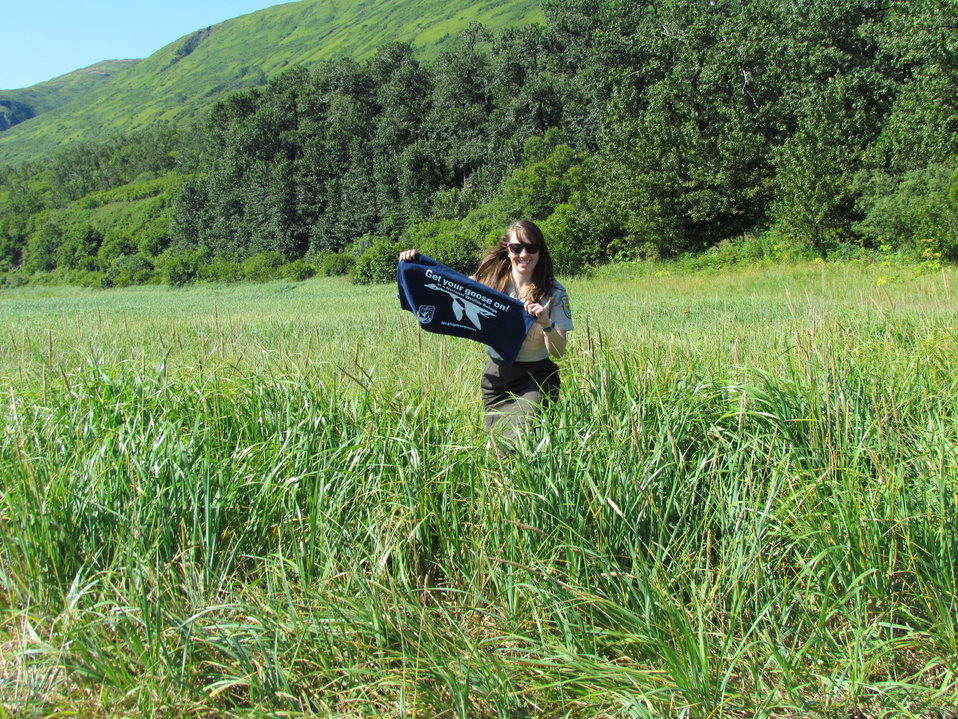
Get Your Goose On! - Alaska Style

Seasonal Park Ranger, Kari Eschenbacher

Credit: Shelly Lawson / USFWS

The Kodiak National Wildlife Refuge is a United States National Wildlife Refuge in the Kodiak Archipelago in southwestern Alaska, United States.

The Kodiak National Wildlife Refuge includes the southwestern two-thirds of Kodiak Island, Uganik Island, the Red Peaks area of Afognak Island and all of Ban Island in the archipelago. It encompasses 1,990,418 acres (8,054.94 km2).[2] The refuge is administered from offices in Kodiak.

The refuge contains seven major rivers and about 100 streams. It is a spawning ground for all six species of Pacific Ocean salmon, trout and several other fish species, as well as a nesting ground for 250 species of bird, many of which feed on salmon. The refuge has only six native species of mammals: Kodiak brown bear, red fox, river otter, ermine, little brown bat and tundra vole. The non-native mammals Sitka deer, mountain goat, Roosevelt elk, snowshoe hare and beaver were introduced to the archipelago between the 1920s and 1950s and are now hunted and trapped.

The climate of the refuge is that of southern Alaska, mild and rainy. Many areas in the refuge are densely forested with Sitka Spruce at lower elevations. There are grasslands in drier areas and at higher elevations. The refuge contains several small glaciers.